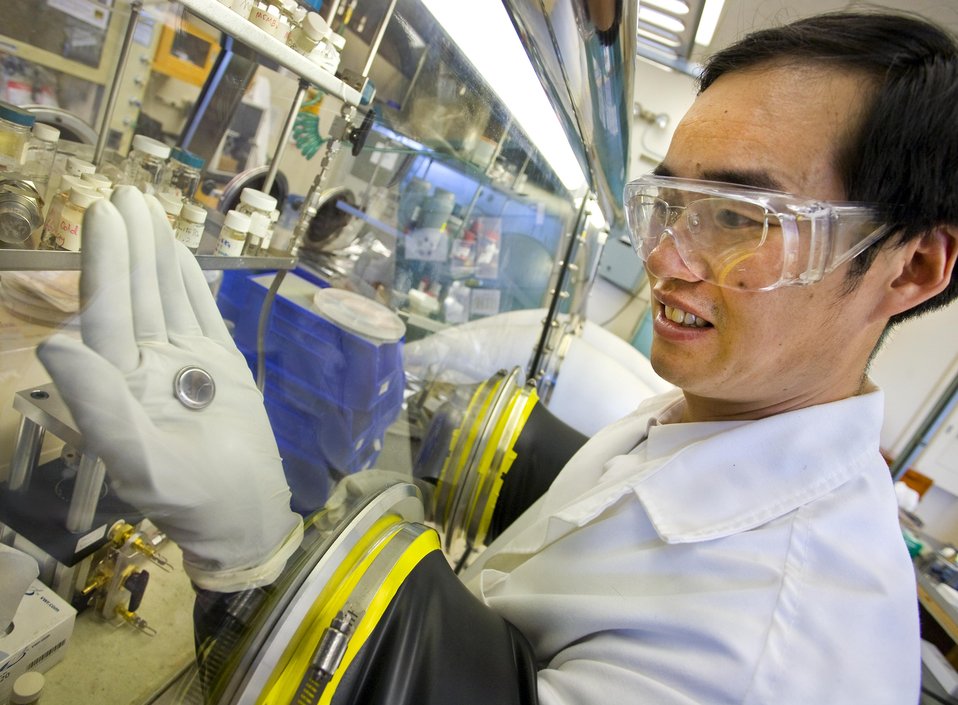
LBNL scientists holds a coin cell sized battery that is used to evaluate high energy density electrode formulations at the lab's Environmental Energy Technology Division's Battery Testing Facility.

Lawrence Berkeley National Laboratory is one of several major U.S. research institutions and industrial firms that form the Joint Center for Energy Storage Research, a public-private partnership which aims to overcome critical scientific and technical barriers and create new breakthrough energy storage technologies.